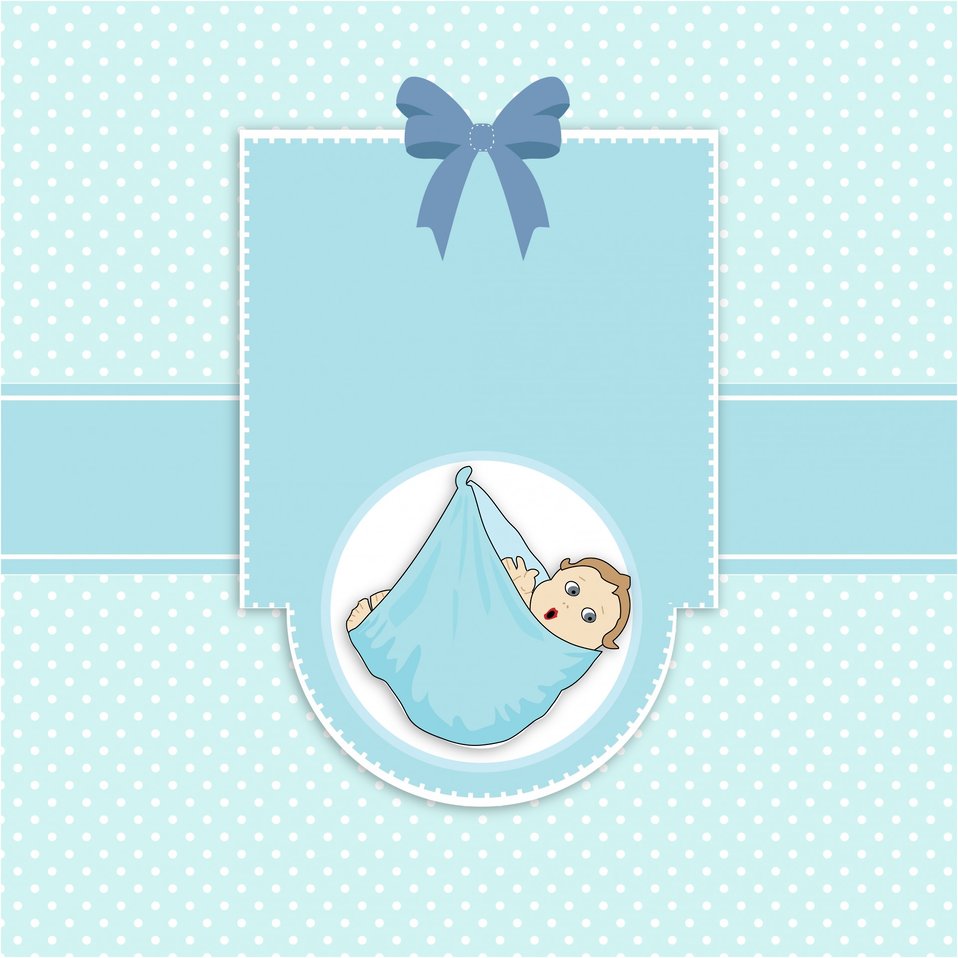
Baby boy arrival card

Cute baby boy arrival card template with frame and blue and white polka dots.